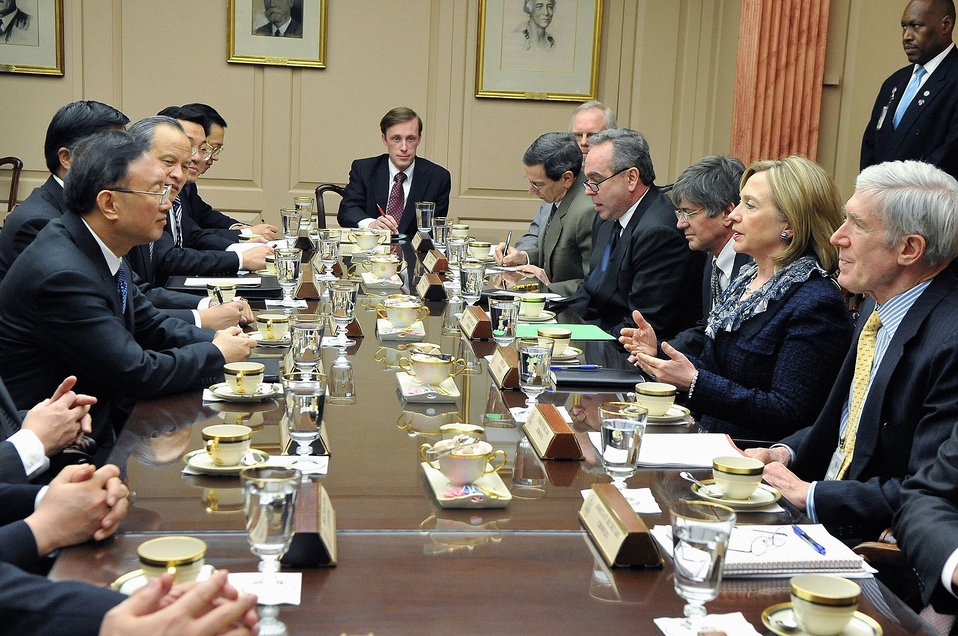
Secretary Clinton Holds a Bilateral Meeting With Chinese Foreign Minister Yang

U.S. Secretary of State Hillary Rodham Clinton, right, holds a bilateral meeting with Chinese Foreign Minister Yang at the U.S. Department of State in Washington, D.C., on January 5, 2010. U.S. Under Secretary of State for Economic, Energy and Agricultural Affairs Robert Hormats, right of the Secretary; U.S. Deputy Secretary of State James Steinberg, left of the Secretary; and U.S. Assistant Secretary of State for East Asian and Pacific Affairs Kurt Campbell, two to the left of the Secretary; also participated in the meeting.